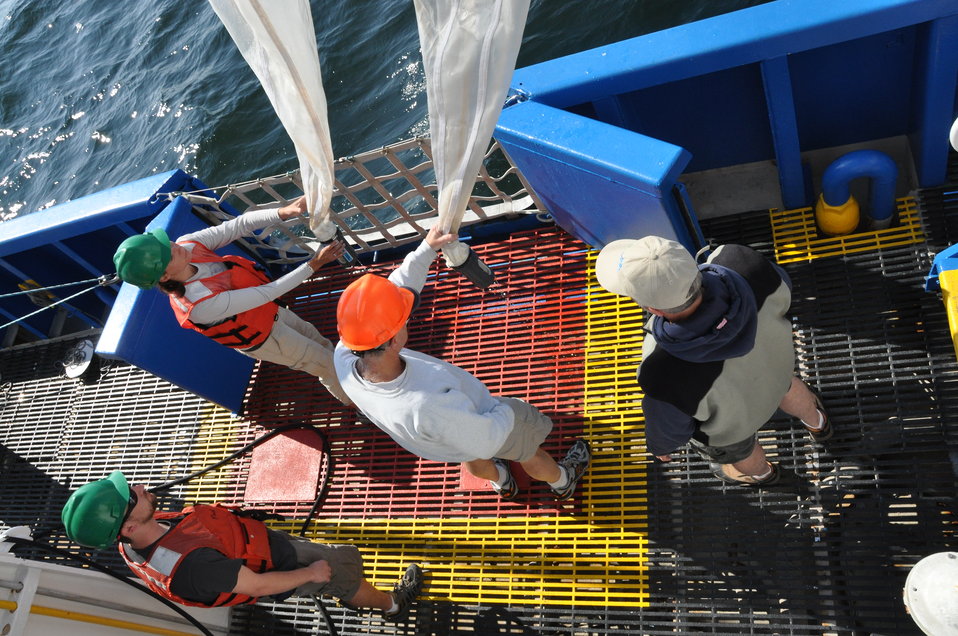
August 2009, A fresh catch of plankton!

At certain points along the New England water quality survey, we collected plankton samples for school children in New Bedford, Mass by towing neuston nets. This was a sample taken over 20 miles offshore around Jeffreys Ledge.